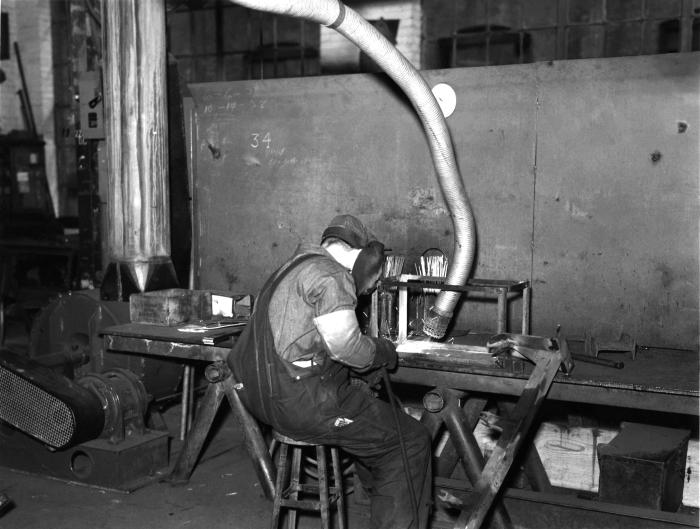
This historical image was provided by the Center for Disease Control's (CDC), National Institute for Occupational Safety and Health (NIOSH). Wearing protective clothing, i.e., coveralls and gloves, and a face shield, the photograph depicted a factory worker seated at a Garfield Smelter�, that was smelting copper at the Seifert, Utah, American Smelting & Refining Co. Note the placement of the mobile exhaust hose immediately adjacent to the worksite. It cannot be determined from this image whether or not the man was wearing a filtered breathing mask.